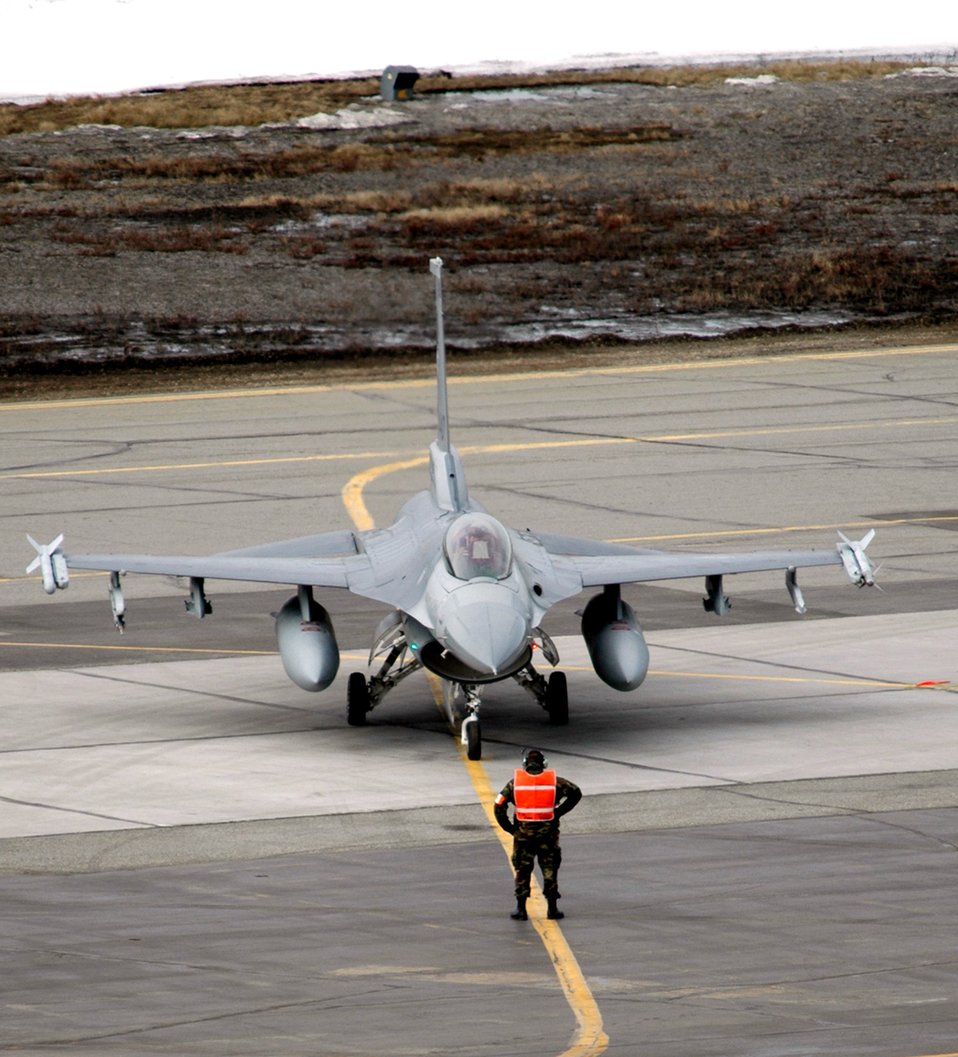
Aggressors vs. friendlies

An F-16 Fighting Falcon from the Air National Guard's 175th Fighter Squadron at Sioux Falls, S.D., is prepped for a familarization flight during Red Flag-Alaska 06-2 at Eielson Air Force Base, Alaska. The 175th FS is part of the